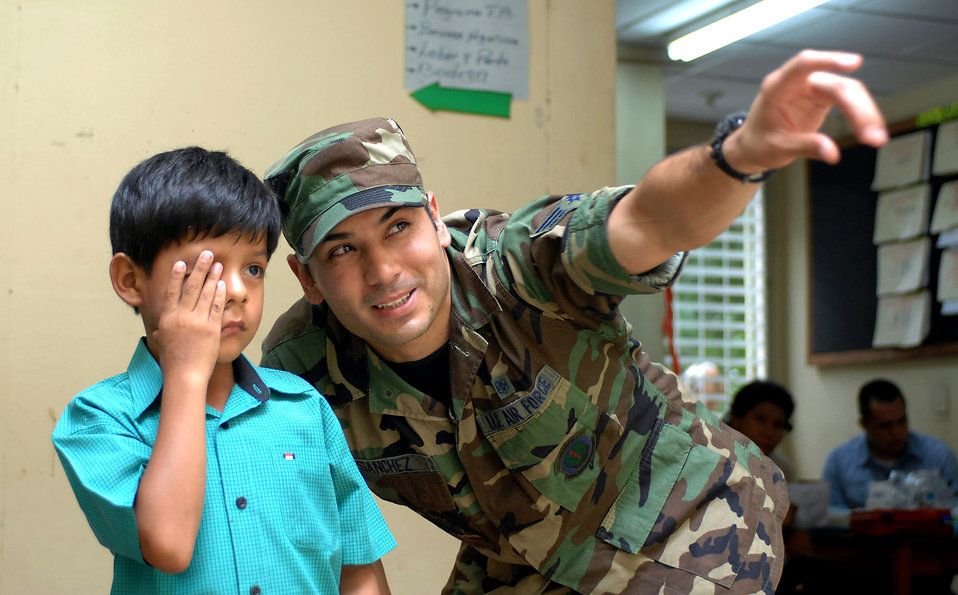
Air Force medics provide care aboard Navy hospital ship

Airman Sebastian Sanchez assists a child during an eye examination July 21 at the 15 de Julio Health Care Center in Chinandega, Nicaragua. The USNS Comfort is on a four-month humanitarian deployment to Latin America and the Caribbean providing medical treatment to patients in a dozen countries. Airman Sanchez is a laboratory technician attached to the Military Sealift Command hospital ship USNS Comfort.